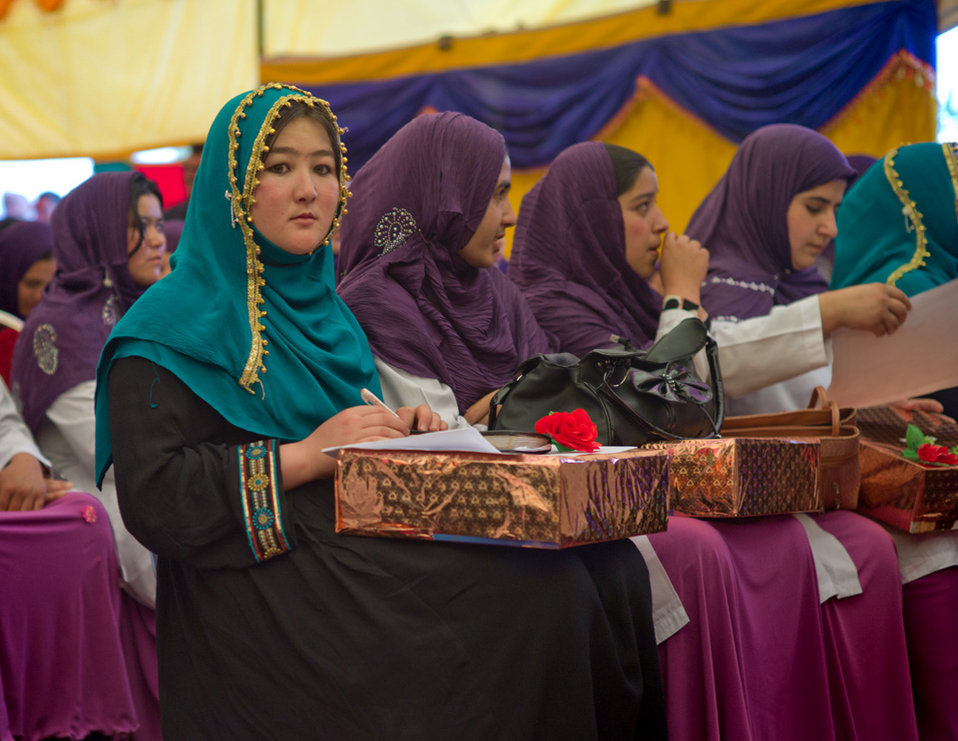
Graduate